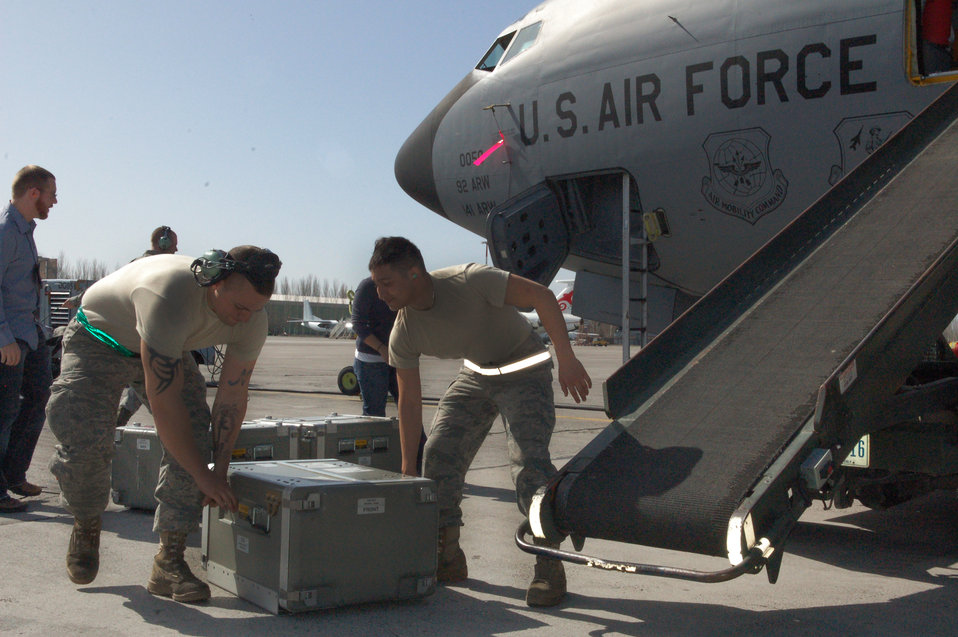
Manas KC-135s revolutionize combat operations

Senior Airman William Allen (left) and Airman 1st Class Roberto Armas help load four cases comprising the Roll-On-Beyond-Line-Of-Sight Enhancement System